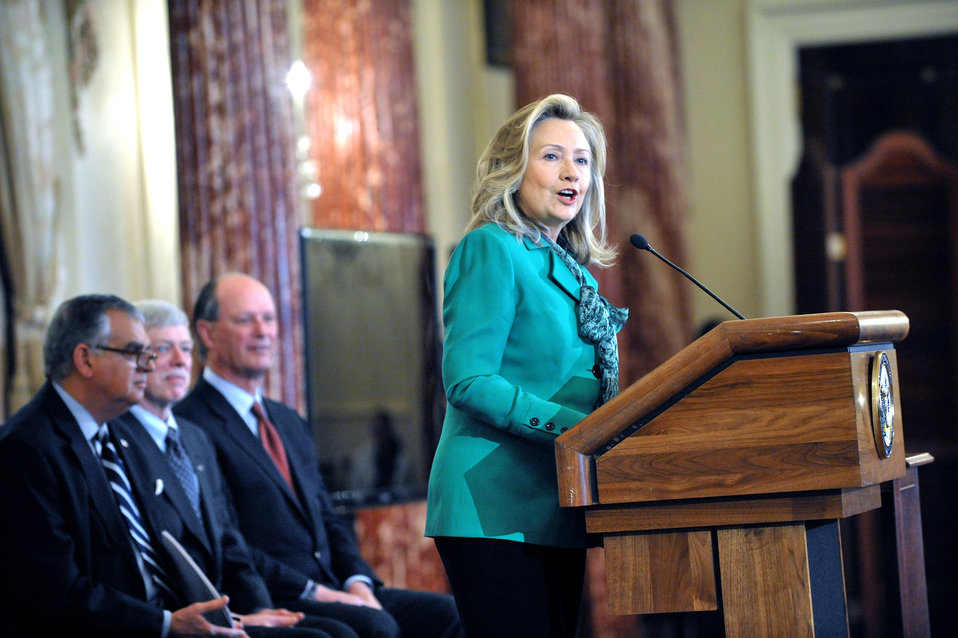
Secretary Clinton Delivers Remarks at Event Celebrating Amelia Earhart and U.S. Ties to Our Pacific Neighbors

U.S. Secretary of State Hillary Rodham Clinton deliver remarks at an event celebrating Amelia Earhart and the United States’ ties to our Pacific neighbors at the Department of State on March 20, 2012.